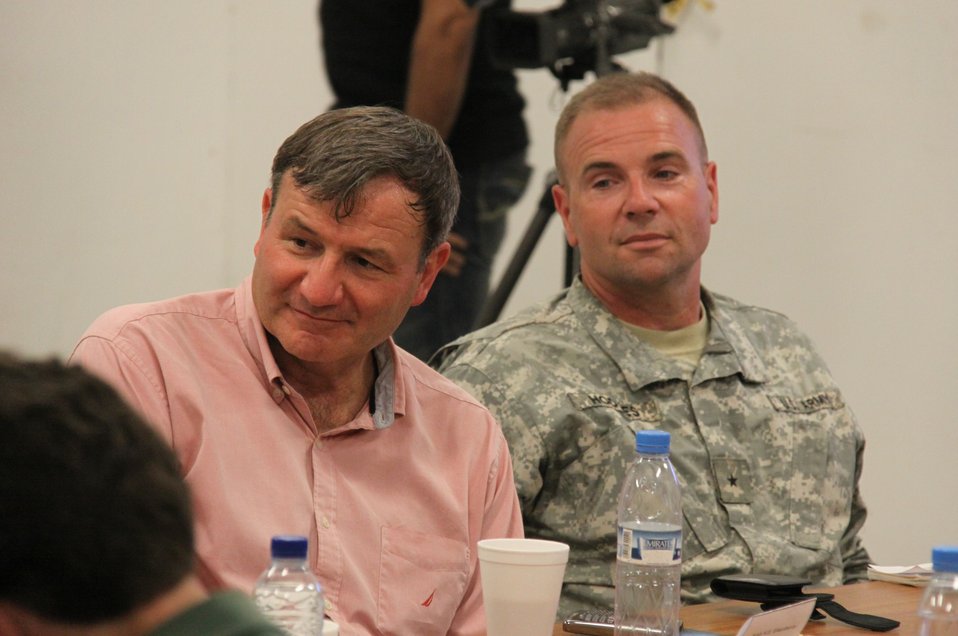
Meeting with Local Leaders in Kandahar